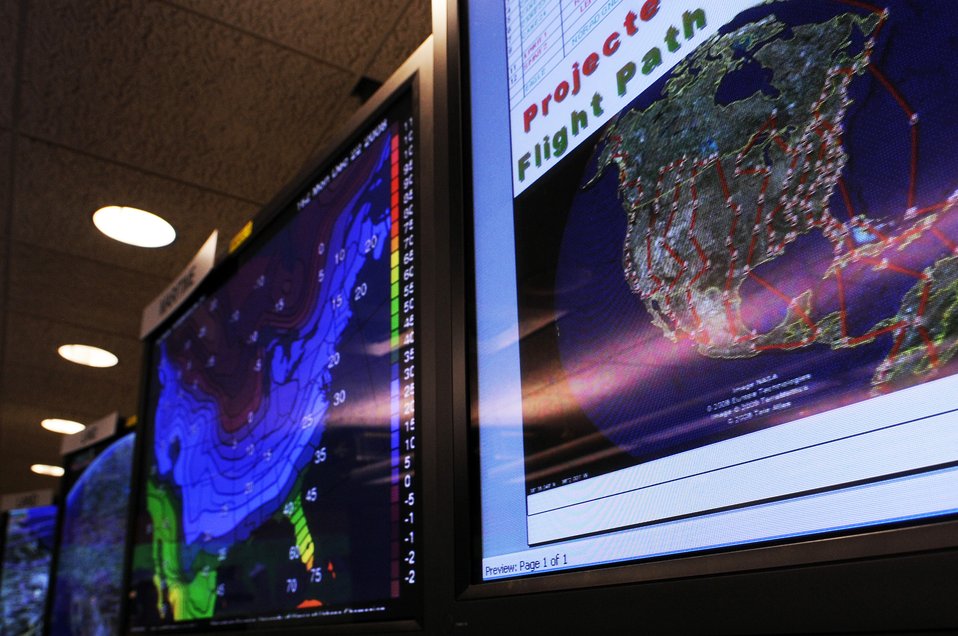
Santa Claus is coming to town

Television screens with valuable information including the route of Santa Claus' projected flight path and weather updates fill the room of the North American Aerospace Defense Command Tracks Santa Battle Cab Dec. 23 at Peterson Air Force Base, Colo. Santa received Federal Aviation Administration, weather and air mission briefs.